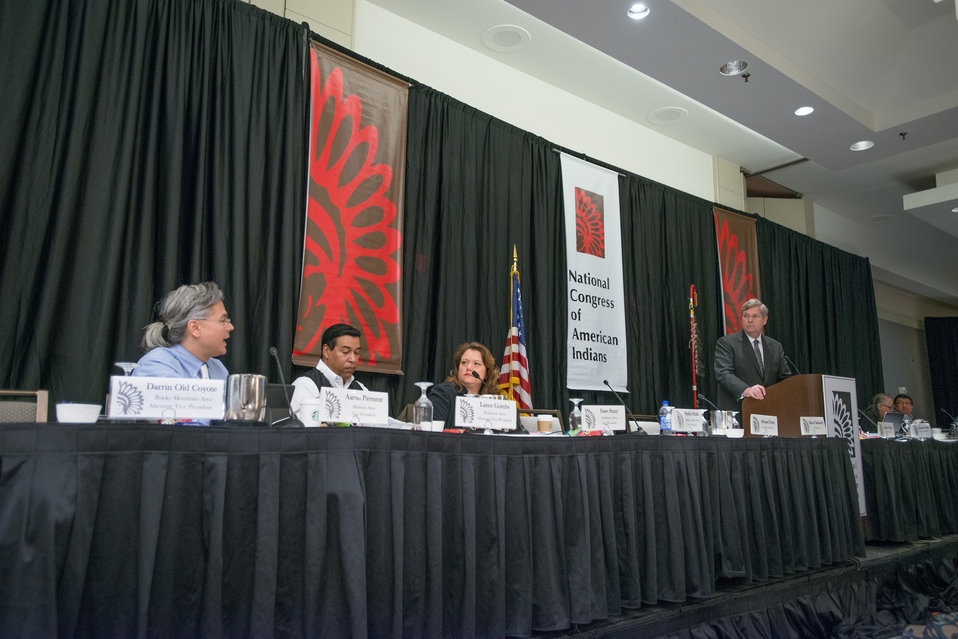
Agriculture Secretary Tom Vilsack takes questions from 2014 National Congress of American Indians (NCAI) Chairperson Aaron Payment (left) of the Sault Ste. Marie Tribe of Chippewa Indians, during the Executive Council Winter Session, at the Westin Washington City Center in Washington, D.C. on Thursday, Mar. 13, 2014.